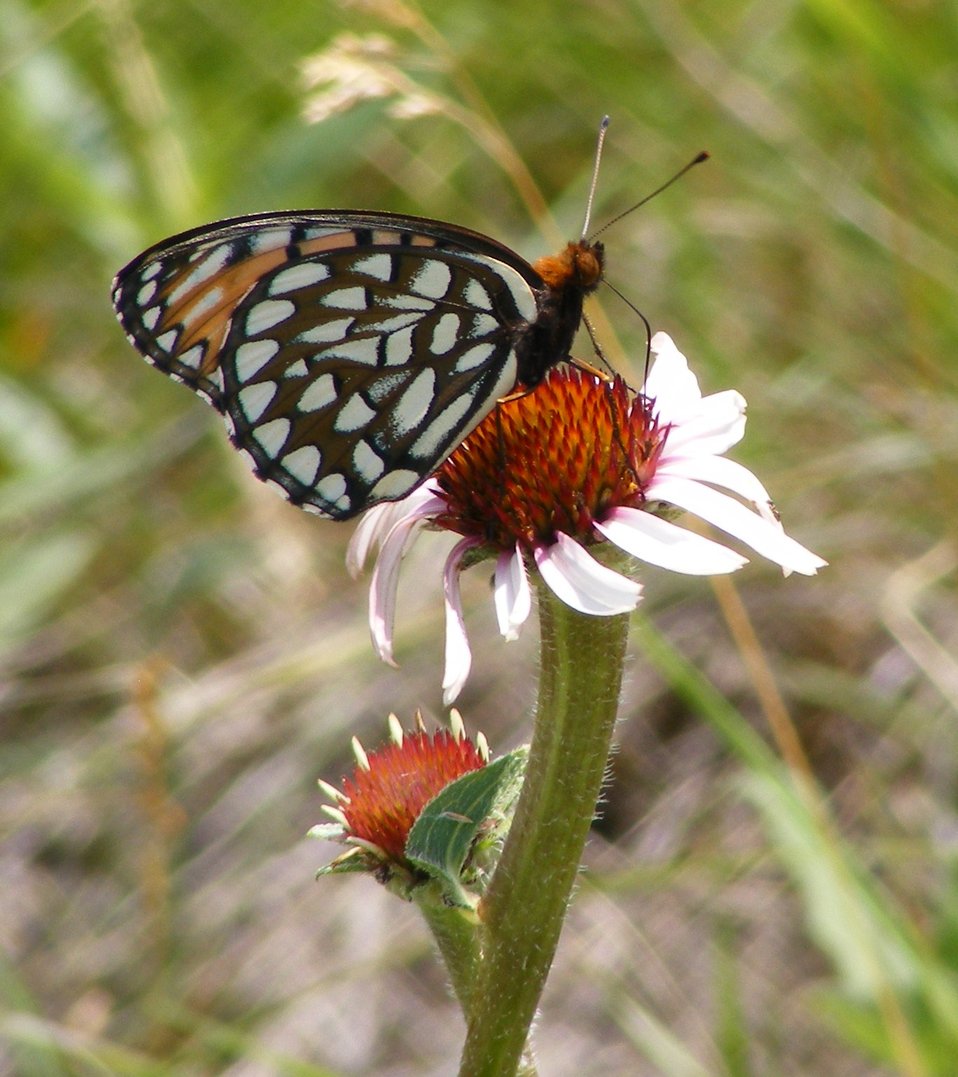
Regal Beauty

A regal fritillary butterfly poses on a purple coneflower. Photo taken in native prairie on a Waterfowl Production Area in Waubay Wetland Management District in SD.